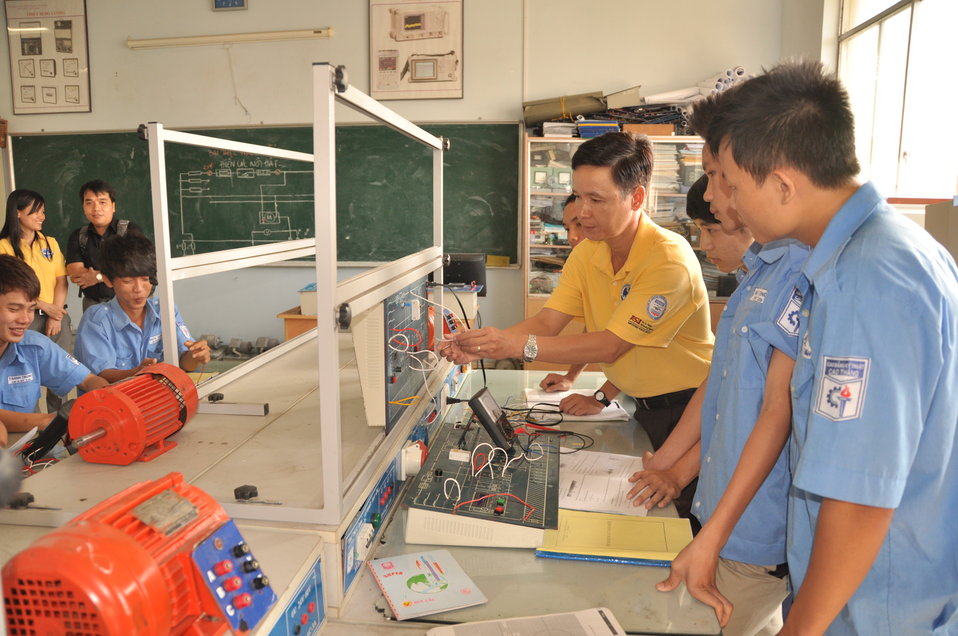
HEEAP Partner, Cao Thang Technical College

Faculty trained with support of HEEAP
Ho Chi Minh City, January 12, 2013